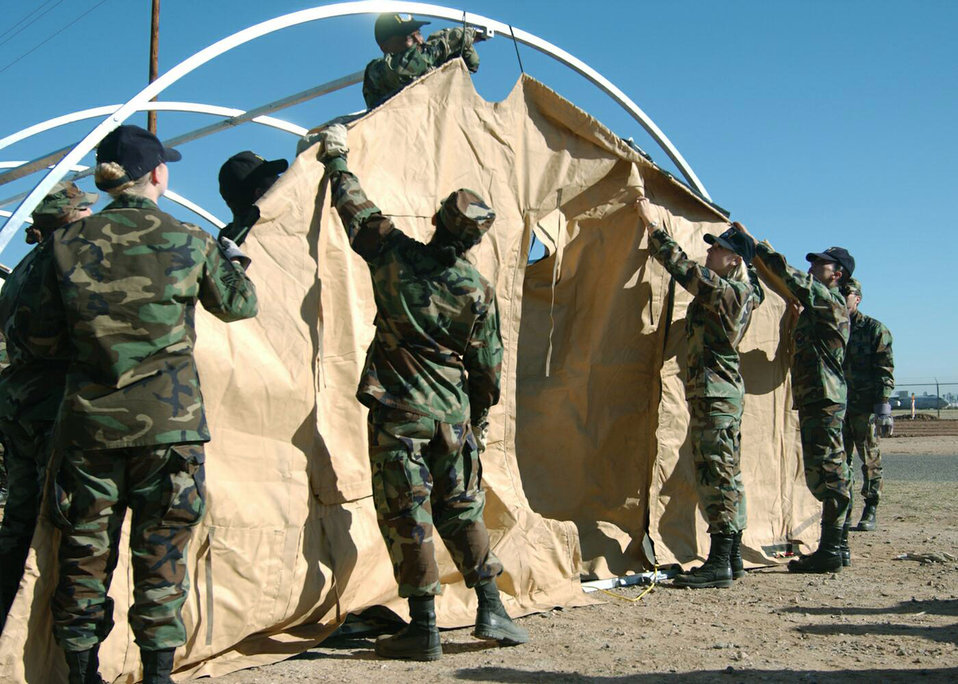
A tents situation

DAVIS-MONTHAN AIR FORCE BASE, Ariz. -- Airmen from the 355th Medical Support Squadron here erect an Alaskan shelter that is used for patient care at deployed locations. The Airmen train like this quarterly to prepare them for deployment.